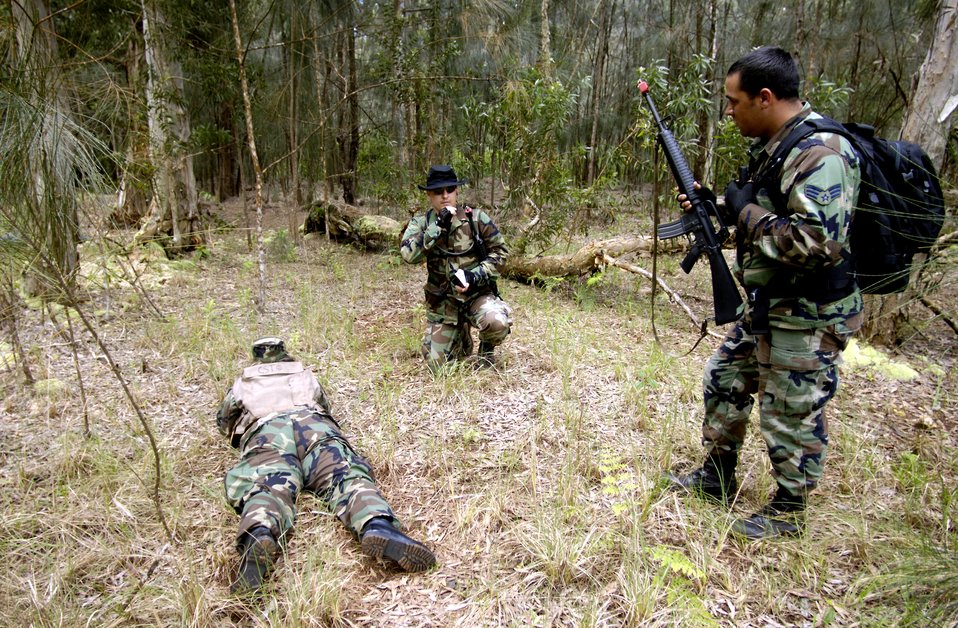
Survival refresher course

Airman 1st Class Robert Rosinski and Senior Airman Benjamin Figueroa detain a student after finding her hiding spot during a ground survival refresher course at Schofield Barracks, Hawaii, on Thursday, May 4, 2006. The course provides realistic training for aircrew members and concentrates on the principles, techniques and skills necessary to survive in any environment. Airmen Rosinski and Figueroa served as